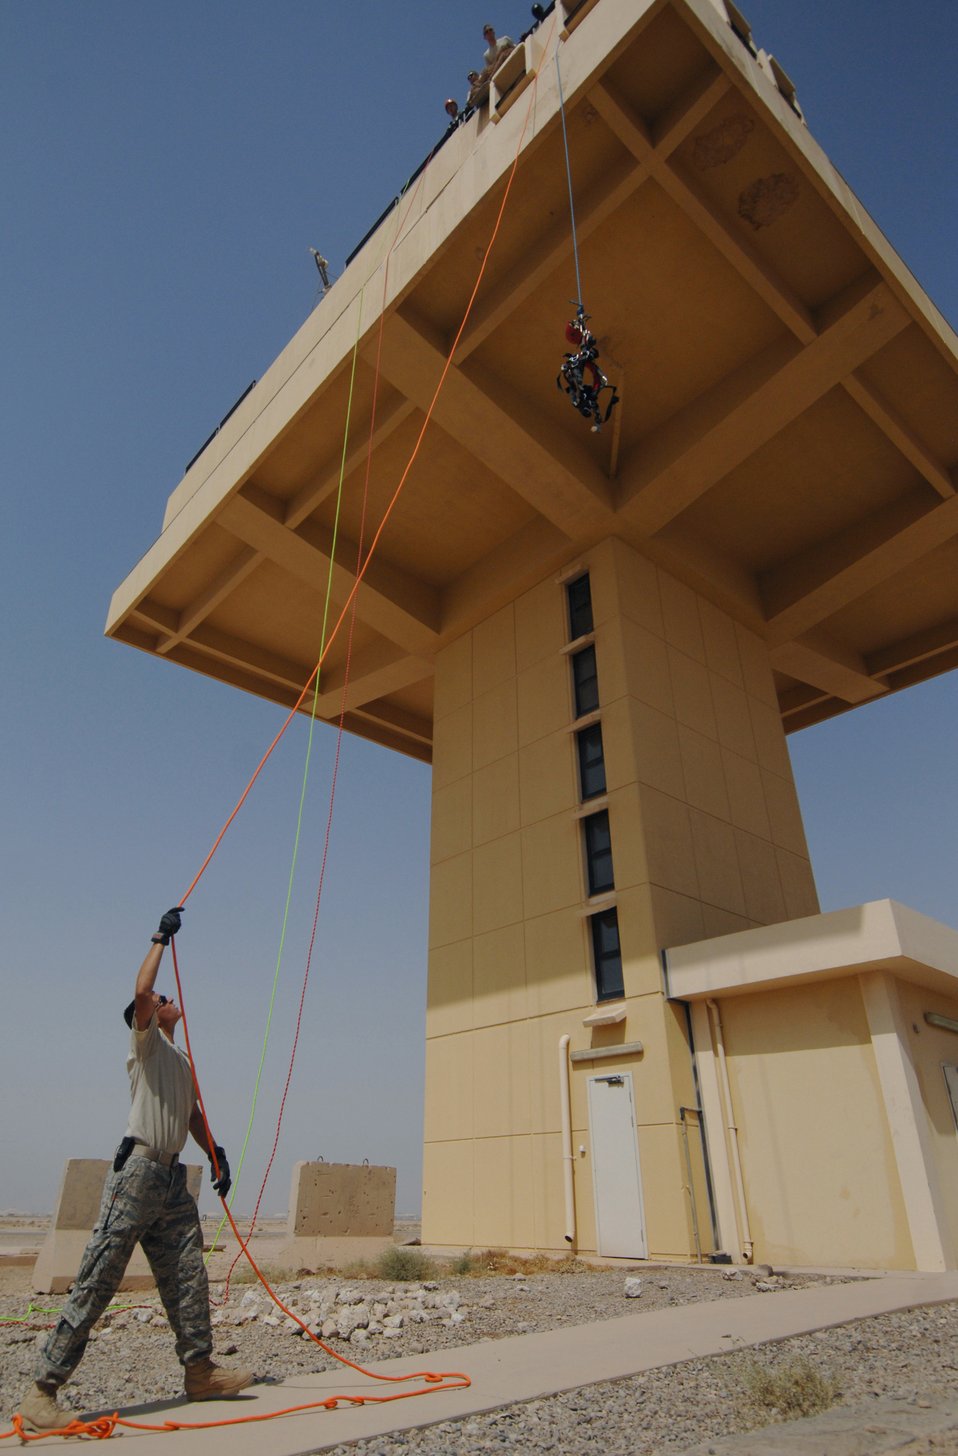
Balad firefighters rappel tower

Senior Airman Mark Born, a firefighter with the 332nd Expeditionary Civil Engineer Squadron, returns the harness back to the top of control tower during a training exercise Aug. 20, 2009, at Joint Base Balad, Iraq..